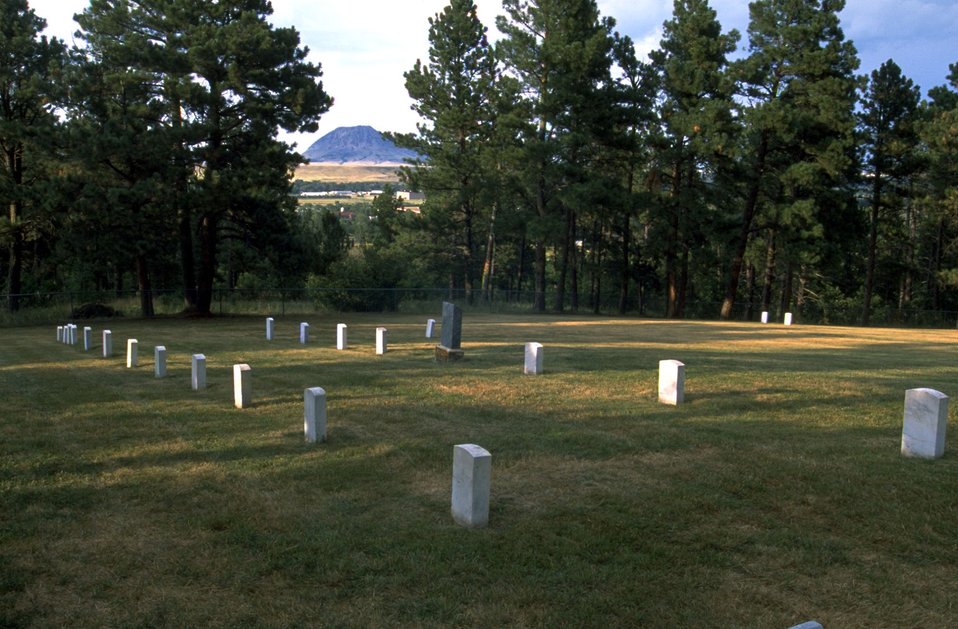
Old Post Cemetery with Bear Butte in the background